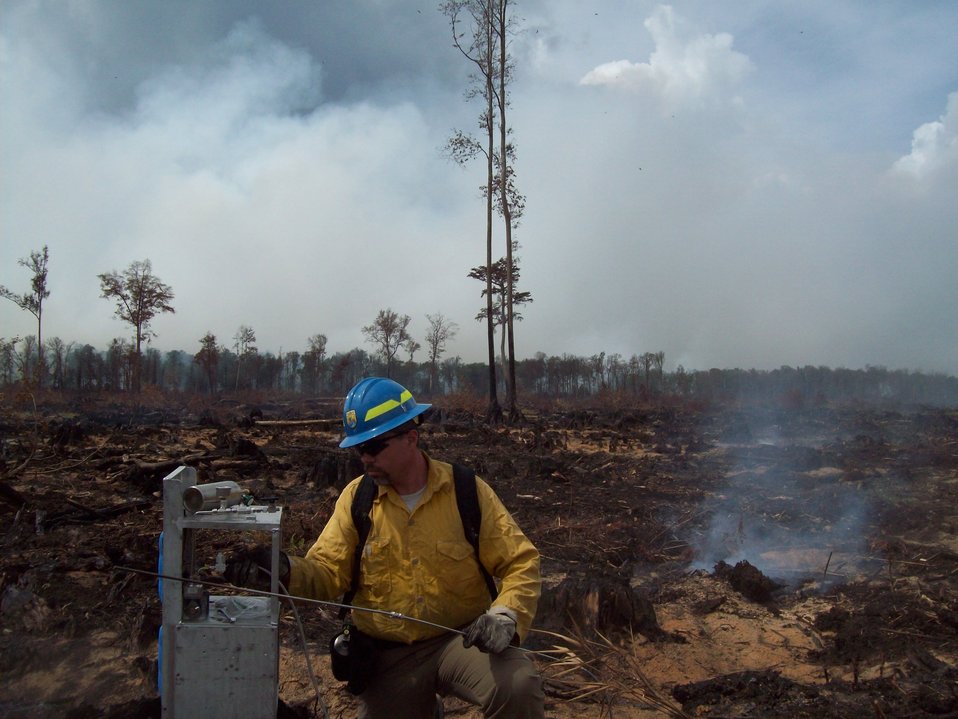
Sampling peat smoke for research

Suffolk, VA, August, 2011: Mike Dueitt, Incident Commander of the Southern Area Type 2 Incident Management Team and an employee of the U.S. Fish and Wildlife Service, collects a sample of peat smoke at the Lateral West Fire burning on Great Dismal Swamp National Wildlife Refuge. Dueitt helped Dr. Amber Soja of NASA's Langley Research Center gather data on the composition of peat smoke.